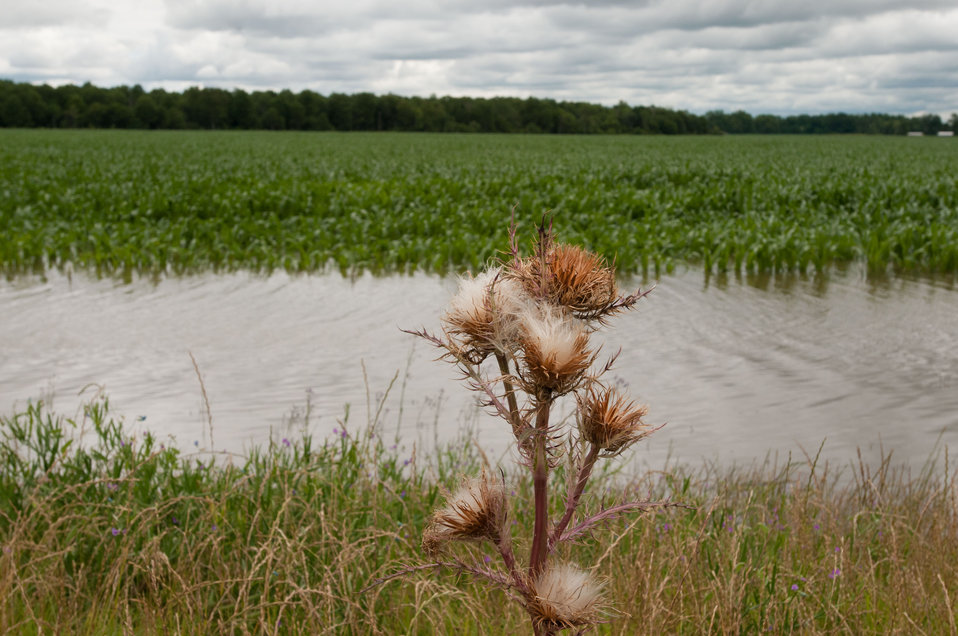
Mississippi River floodwaters have pushed into Yazoo River and into this cornfield near Yazoo City, MS, on Monday, May 16. 2011.